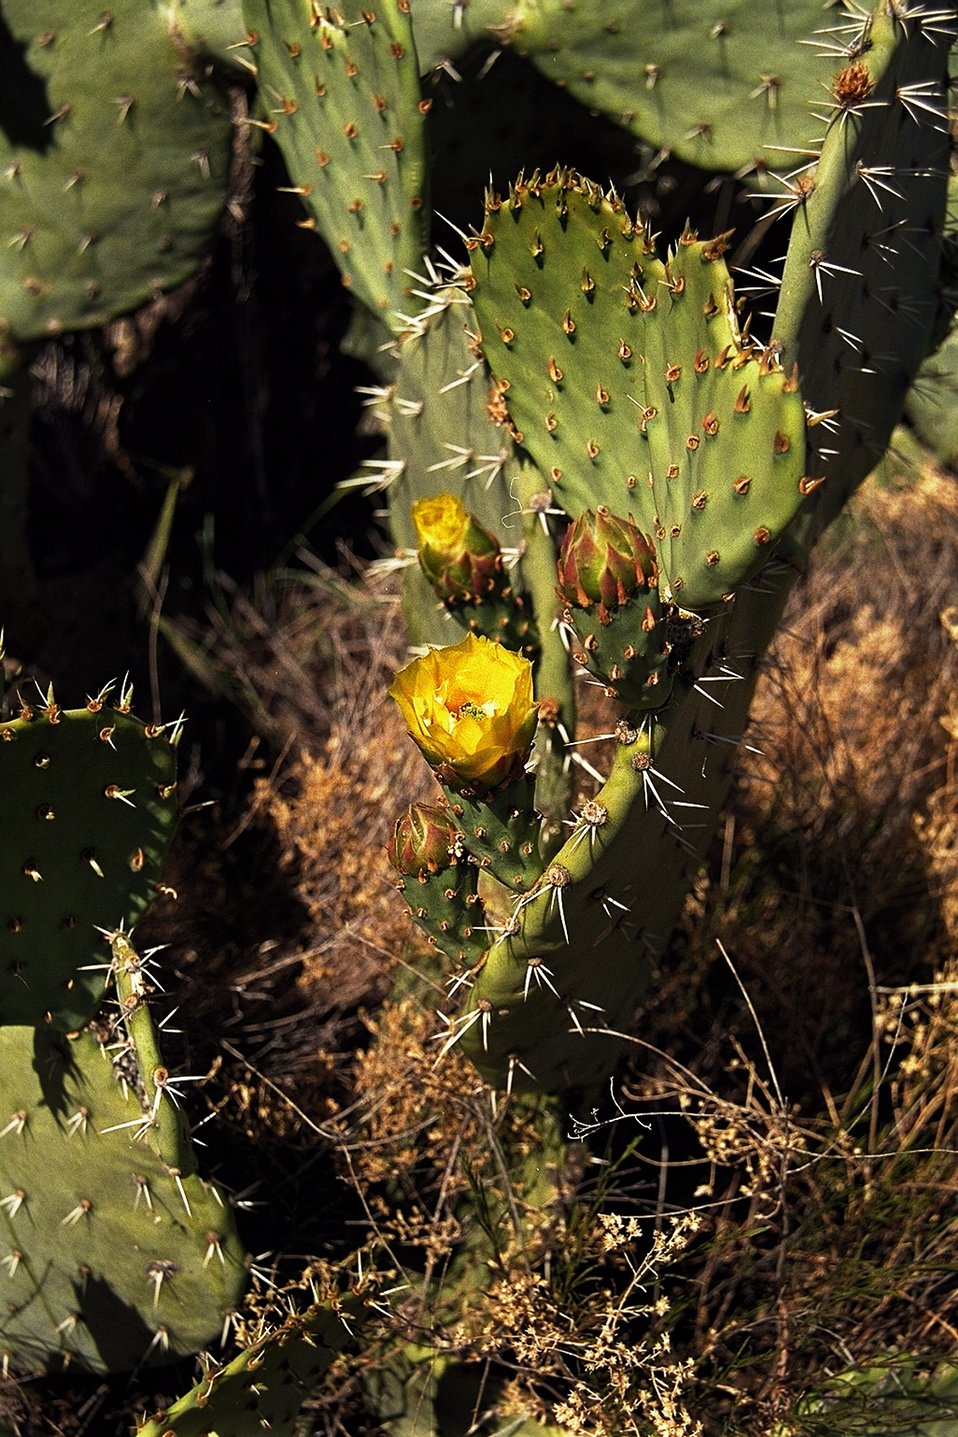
Another Prickly Pear Cactus in bloom in the Agua Fria National Monument.